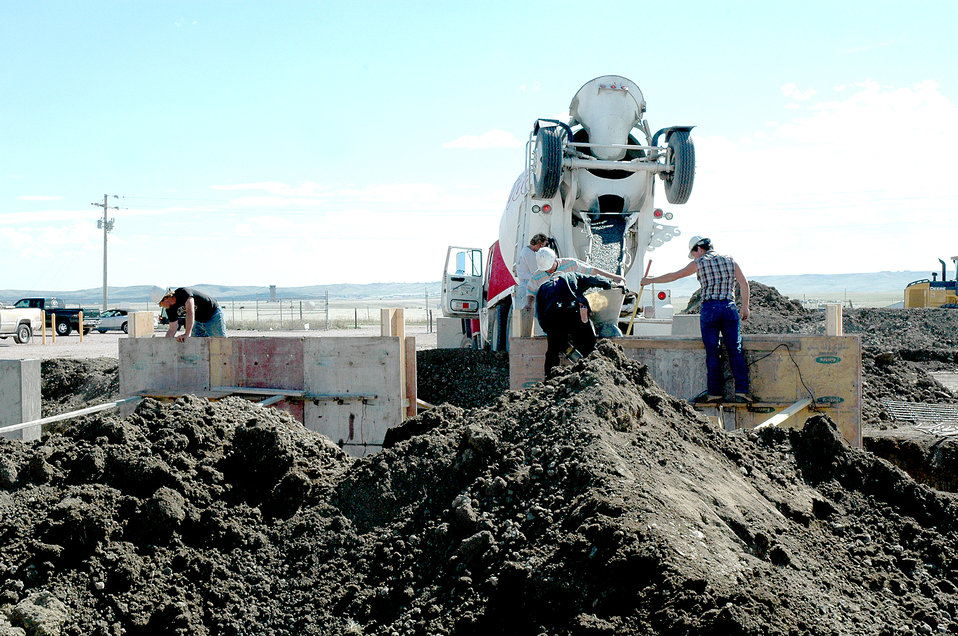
Ellsworth first to receive EPA incentives

Contractors at Ellsworth Air Force Base, S.D., pour concrete at a propane air mix plant Sept. 29, 2006, in preparation for the installation of four new tanks, each capable of holding 60,000 gallons of propane. The plant, completed in December 1998, was part of the first contract partnership between Ellsworth and Montana Dakota Utilities and today saves the base more than $1 million annually.